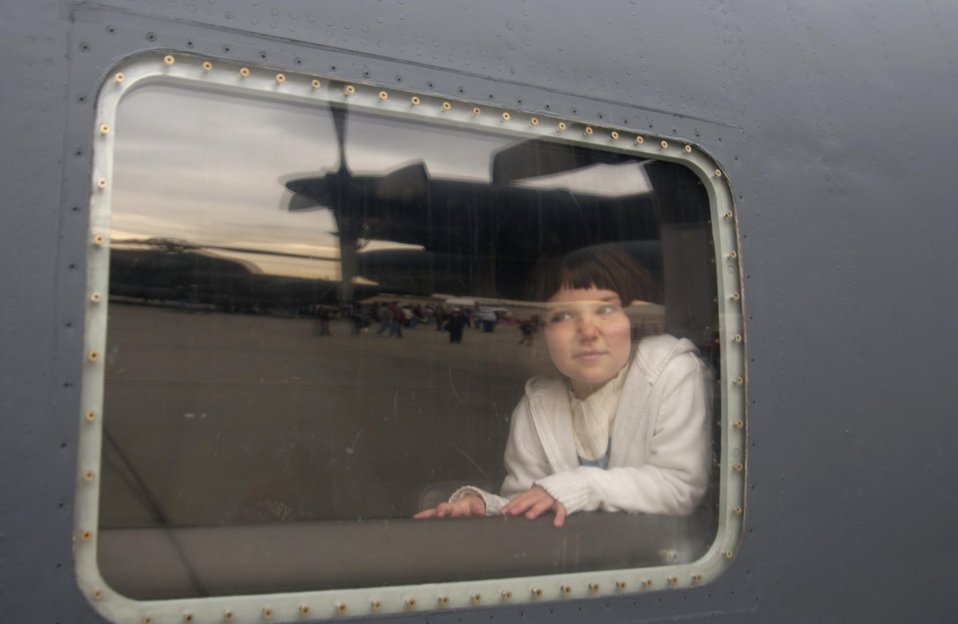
Enjoying the view

Cris Barba looks out the window of an MC-130E Combat Talon I during Aviation Nation 2006 Nov. 11 at Nellis Air Force Base, Nev. Aviation Nation has been called one of the most diverse, entertaining and well-run air shows in America.